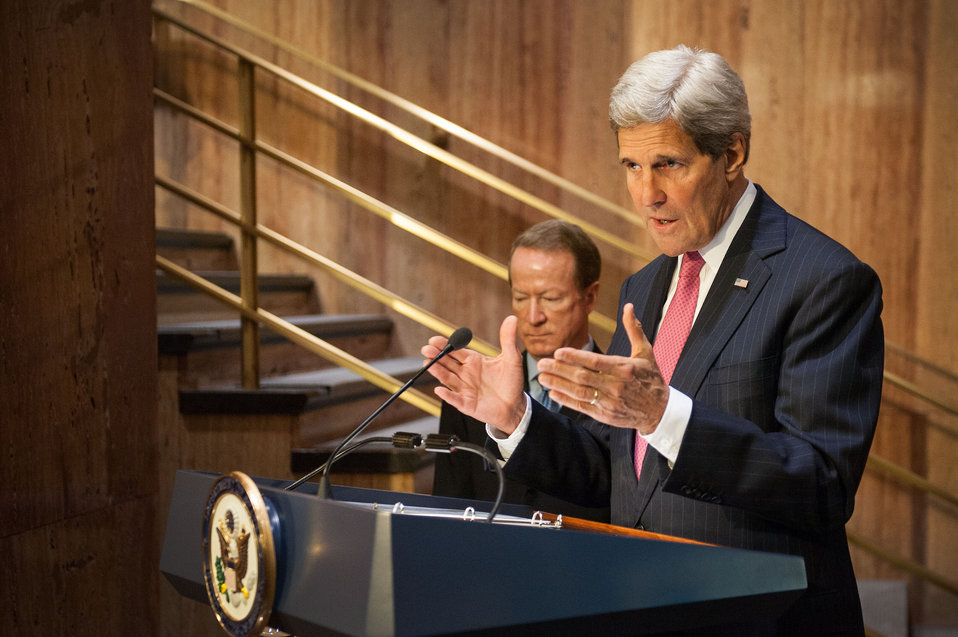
Secretary Kerry Delivers Remarks at the Dedication of the Bureau of International Narcotics and Law Enforcement Affairs Memorial Wall Ceremony

U.S. Secretary of State John Kerry delivers remarks at the dedication of the Bureau of International Narcotics and Law Enforcement Affairs memorial wall ceremony at the U.S. Department of State in Washington, D.C., on June 12, 2014. The memorial honors personnel who have died while participating in overseas criminal justice and counternarcotics assistance programs on behalf of the United States.